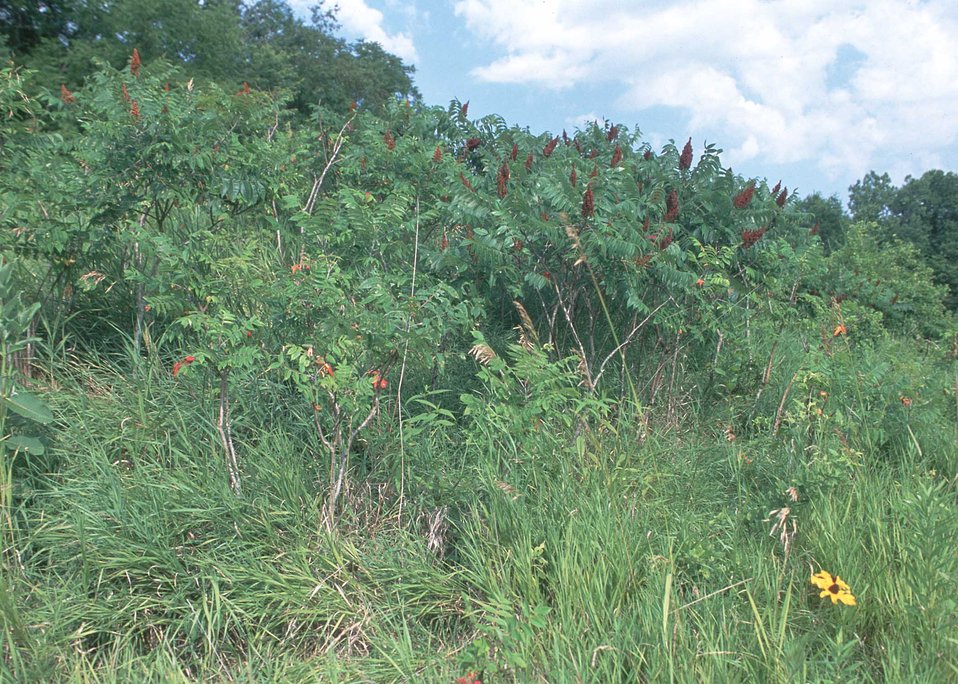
Sumac offers cover for wildlife in southern Iowa at the edge of a woodland, next to a grass planting in Van Buren County, Iowa.